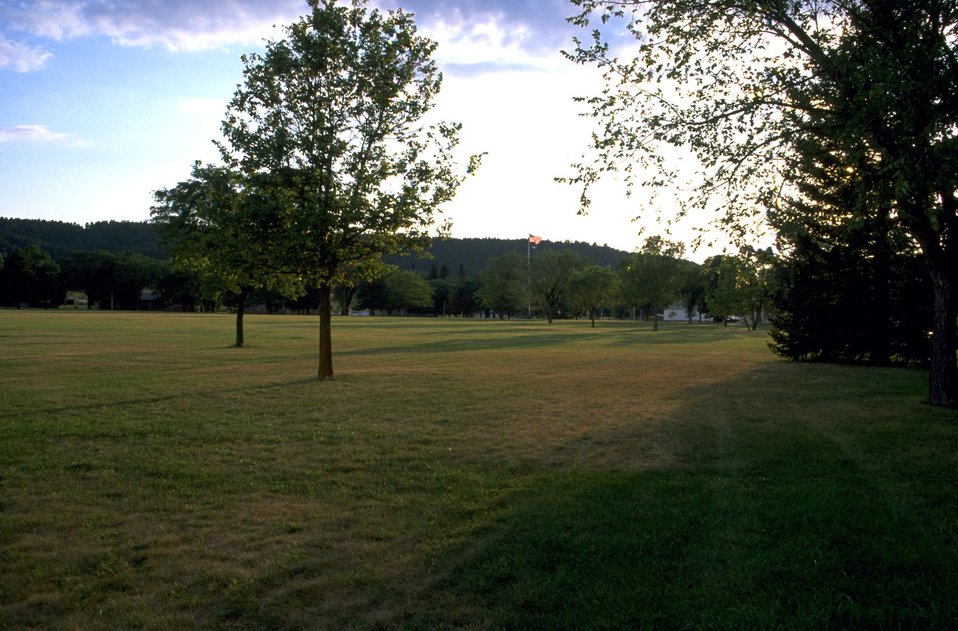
Parade Grounds at the Veterans Administration complex